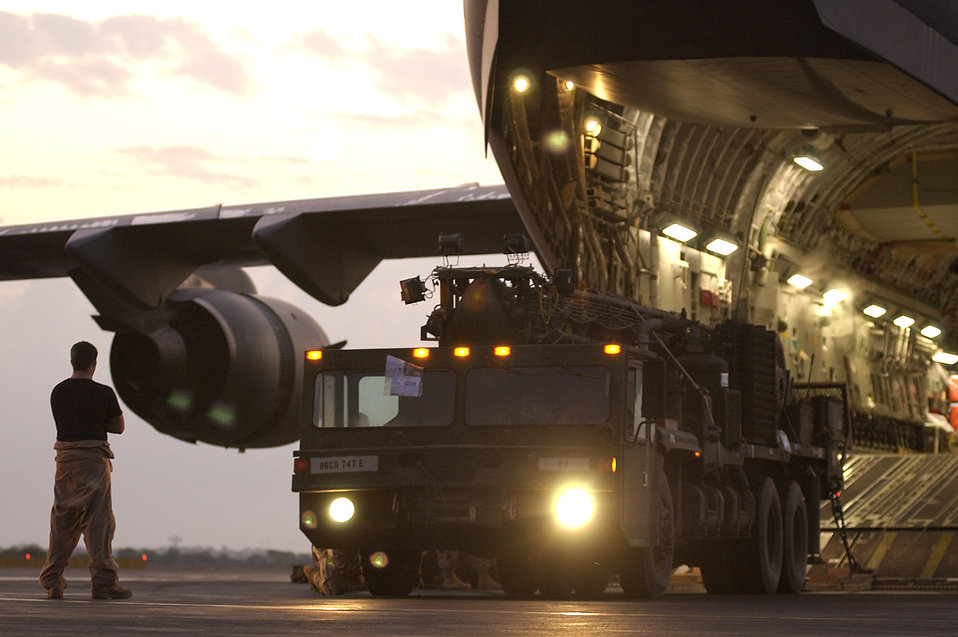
AF Budget

CAMP LEMONIER, Djibouti (AFPN) -- Senior Airman Jake Wyatt watches Soldiers load their well rig onto a C-17 Globemaster III aircraft. This year's $1.3 billion military construction request, as part of the president's fiscal year 2007 budget plan, is the largest in the last 15 years and includes projects for new mission beddowns for the C-17 Globemaster III. Airman Wyatt is a loadmaster from the 14th Airlift Squadron at Charleston Air Force Base, S.C.